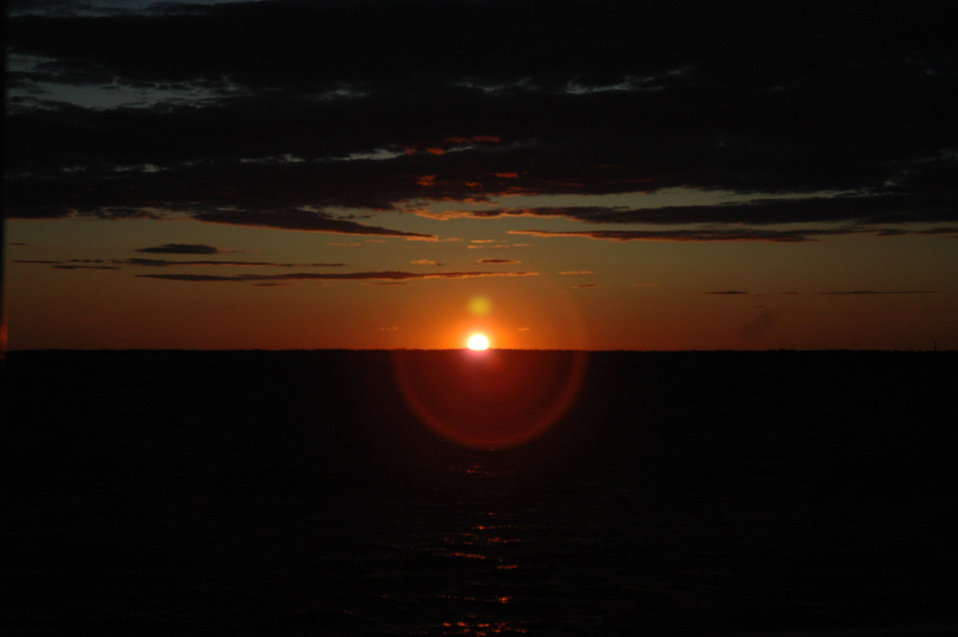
Sunset over Long Island Sound